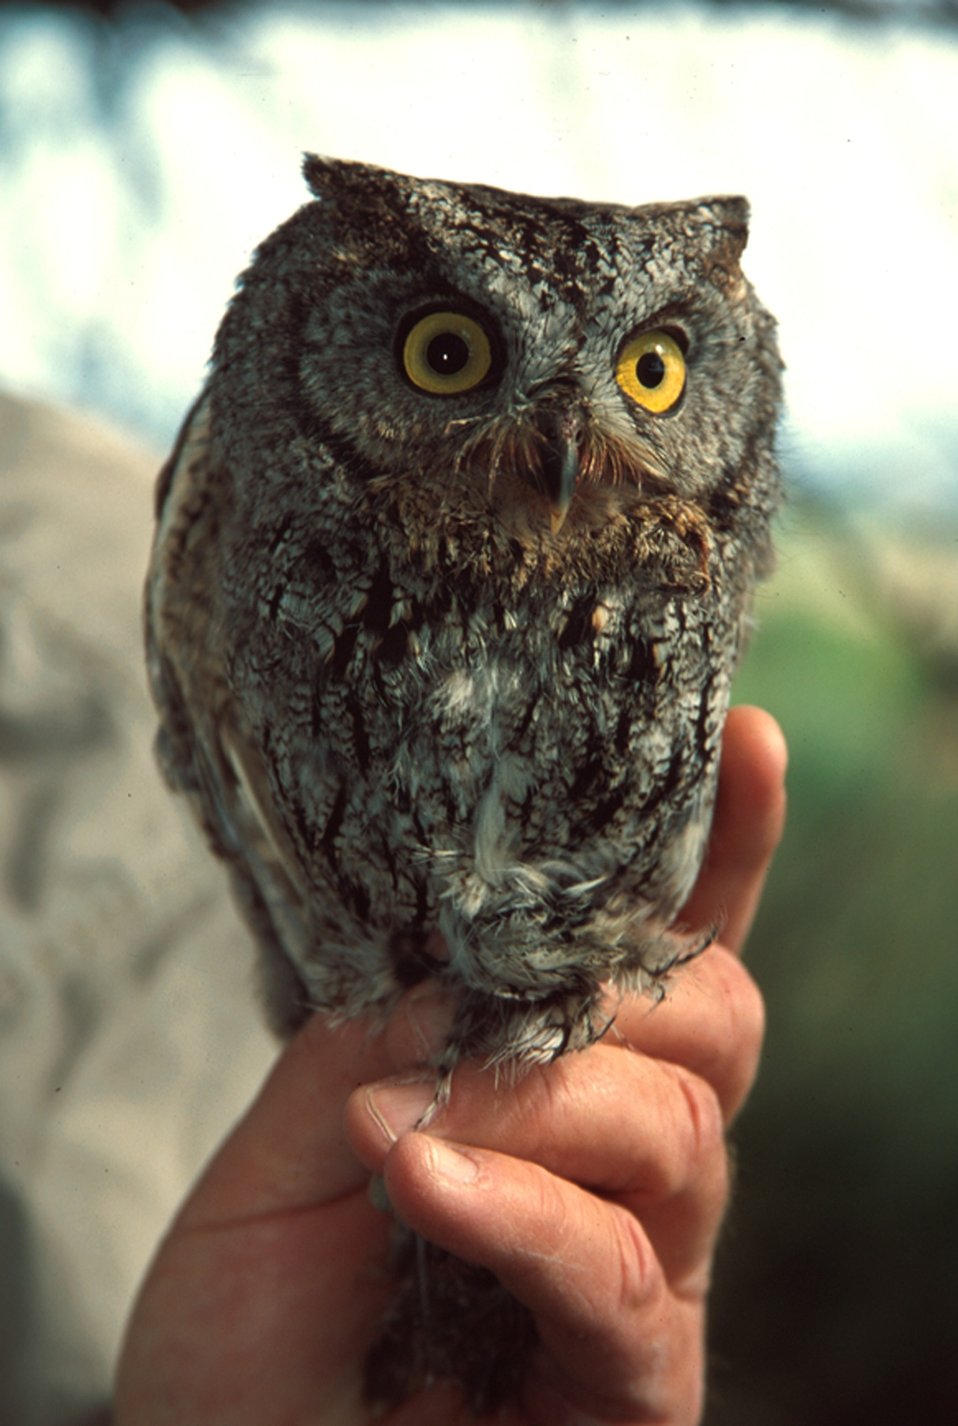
Western Screech Owl Owyhee Field Office LSRD Lower Snake River District